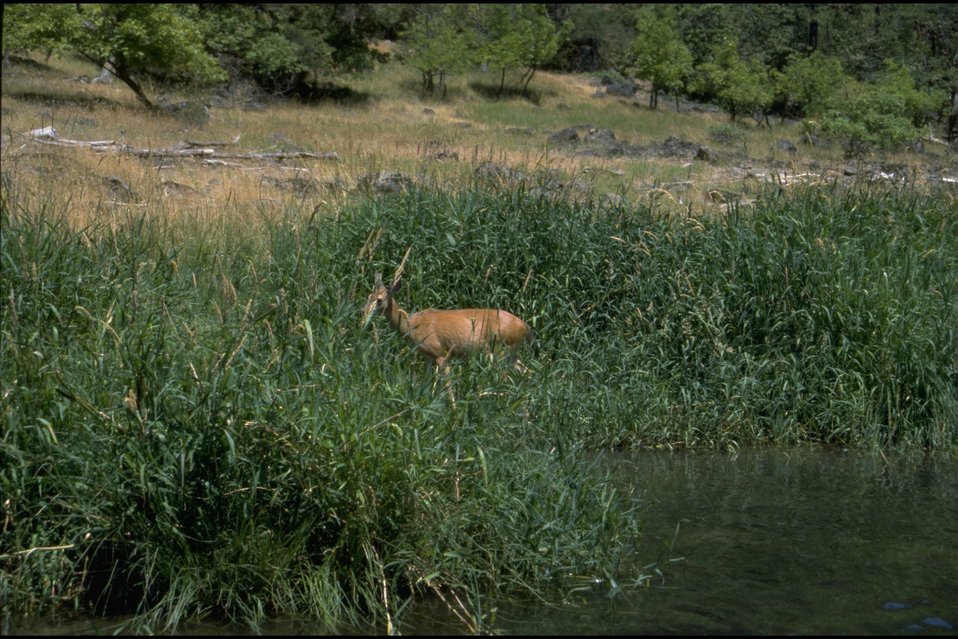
Rogue River - Black Tailed Deer.